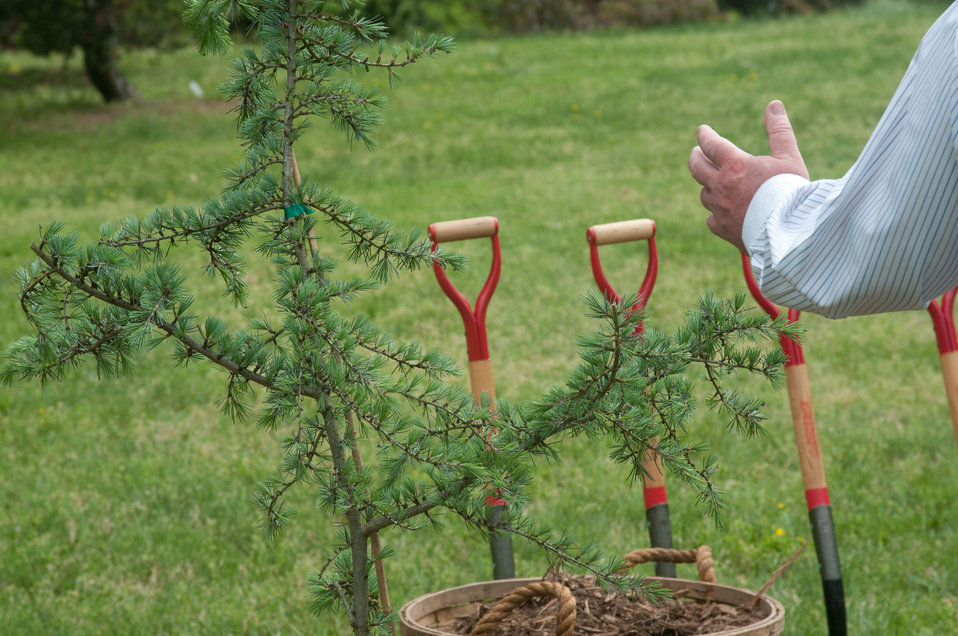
U.S. National Arboretum Gardens Unit Leader Scott Akers talks about the Cedrus deodara ('Karl Fuchs') that will be the first planted in these grounds, on Friday, April 29, 2011 in Washington, DC. The tree is originally from Pakta Province and the most important tree in Afghanistan for timber.